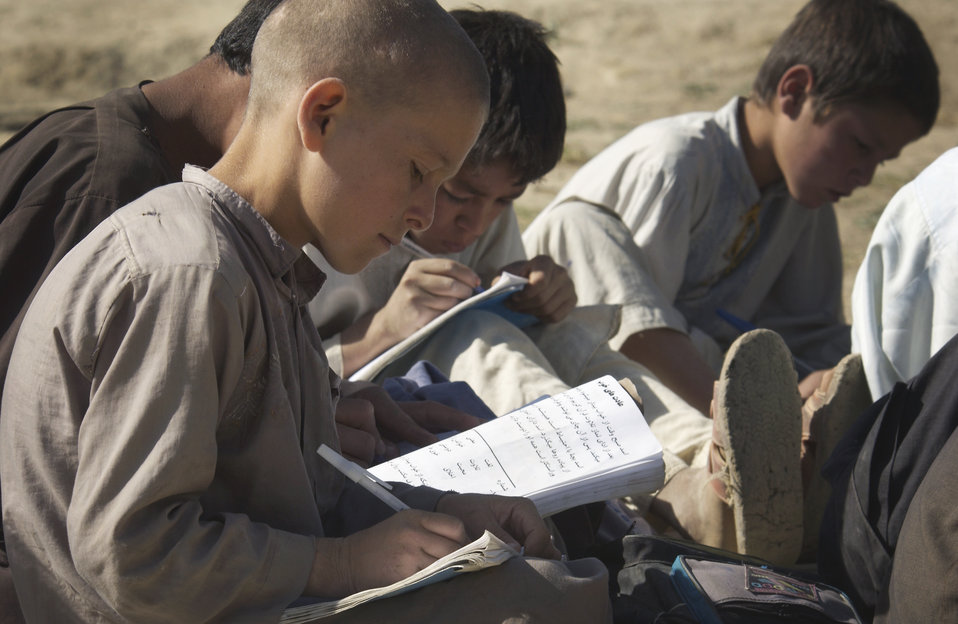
Studying hard

BAGRAM, Afghanistan -- Afghan boys study writing at an outdoor school. Whenever the winds blow, or it rains, school is cancelled. On Oct. 19, airmen delivered an old eight-section tent that will serve as a new school for the children.